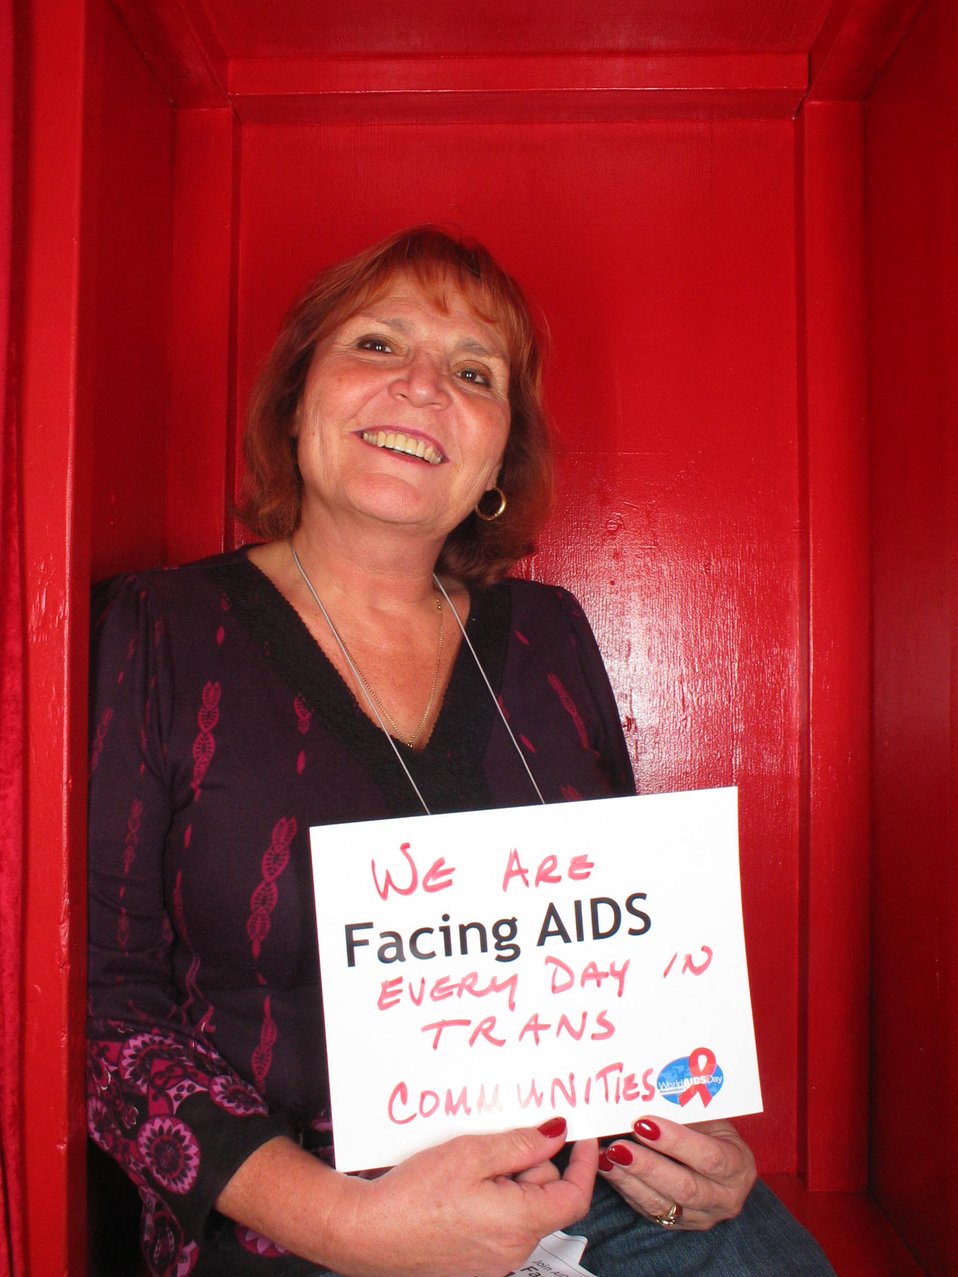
We are Facing AIDS everyday in trans communities